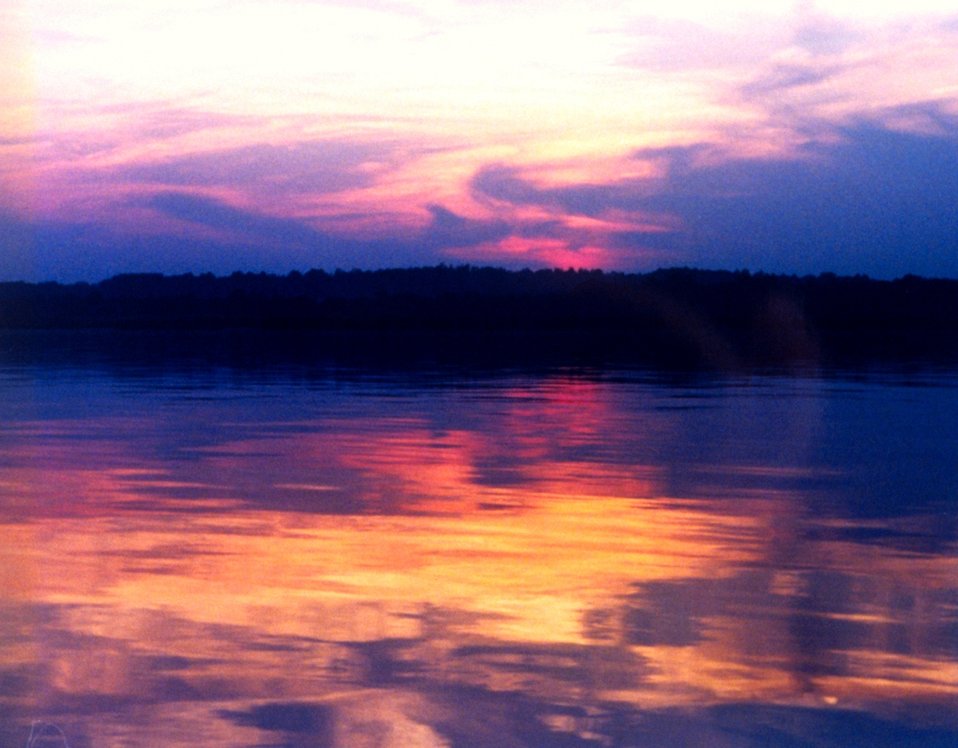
A Patuxent River sunset.